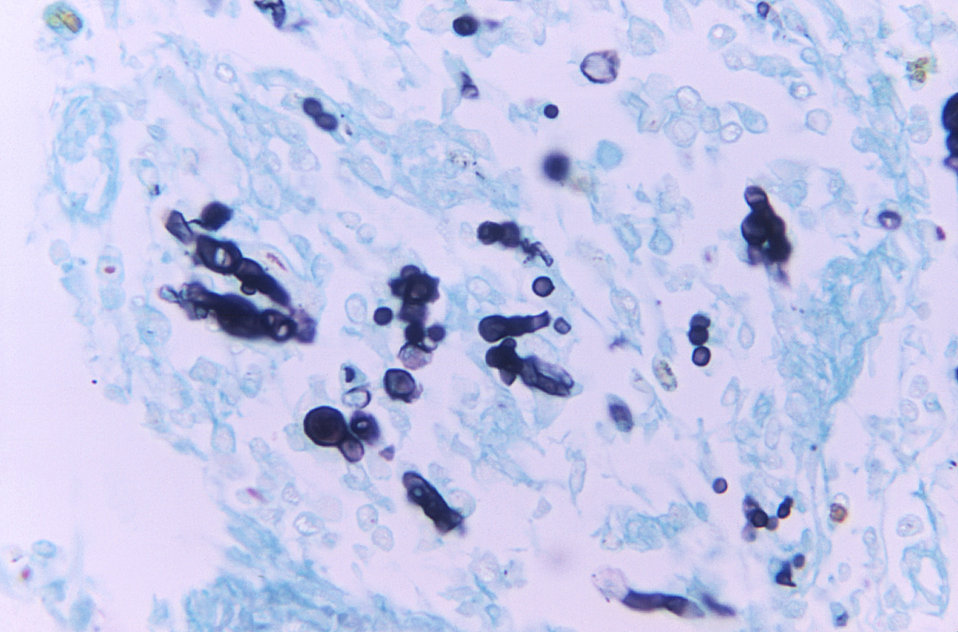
Magnified 850X, this Gamori-stained photomicrograph of a canine liver tissue specimen, revealed the presence of budding Blastomyces dermatitidis fungal cells of various sizes. Note the accompanying filaments, or mycelium.What is blastomycosis?